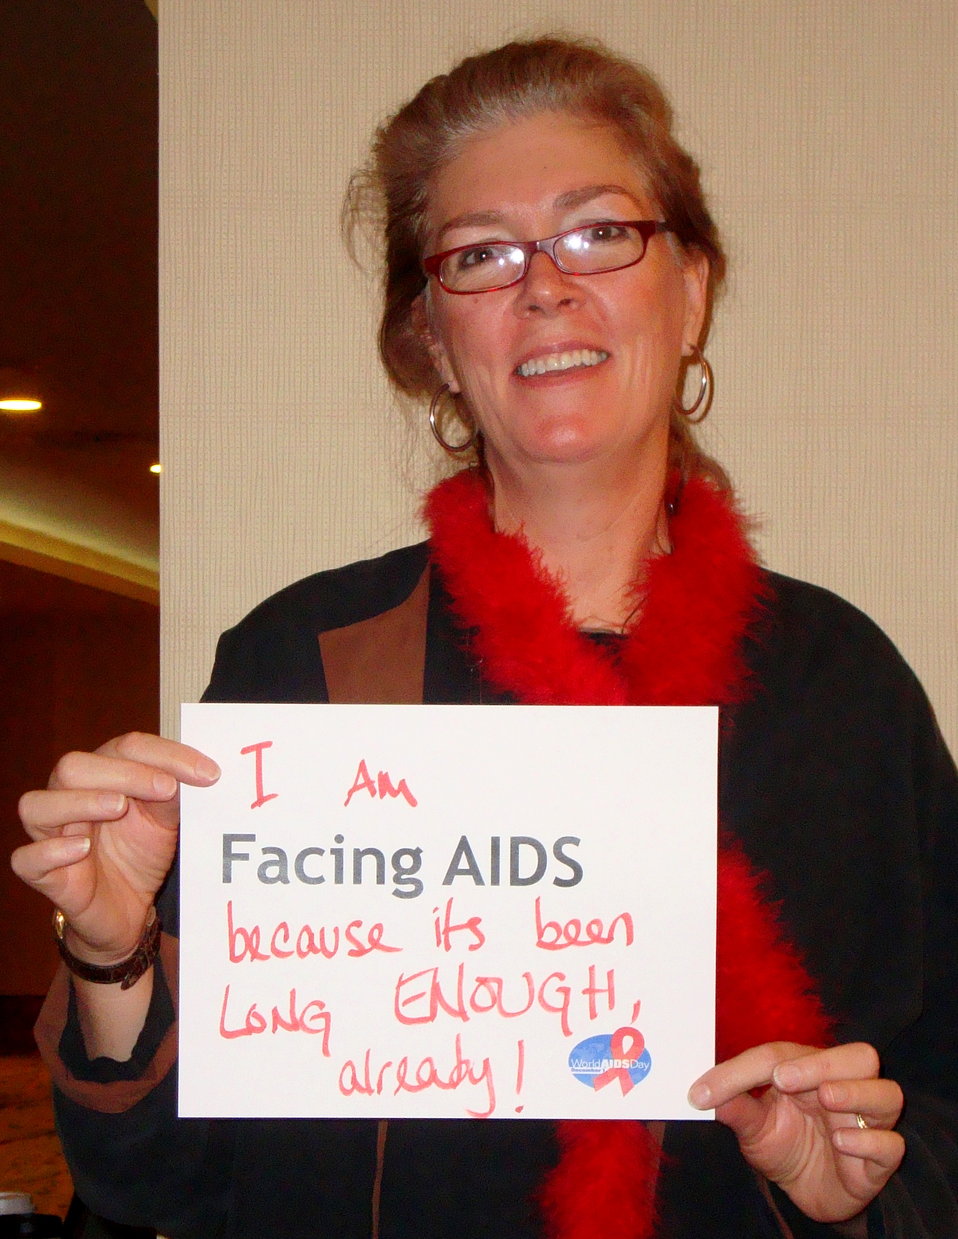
FacingAIDSCampaign 031